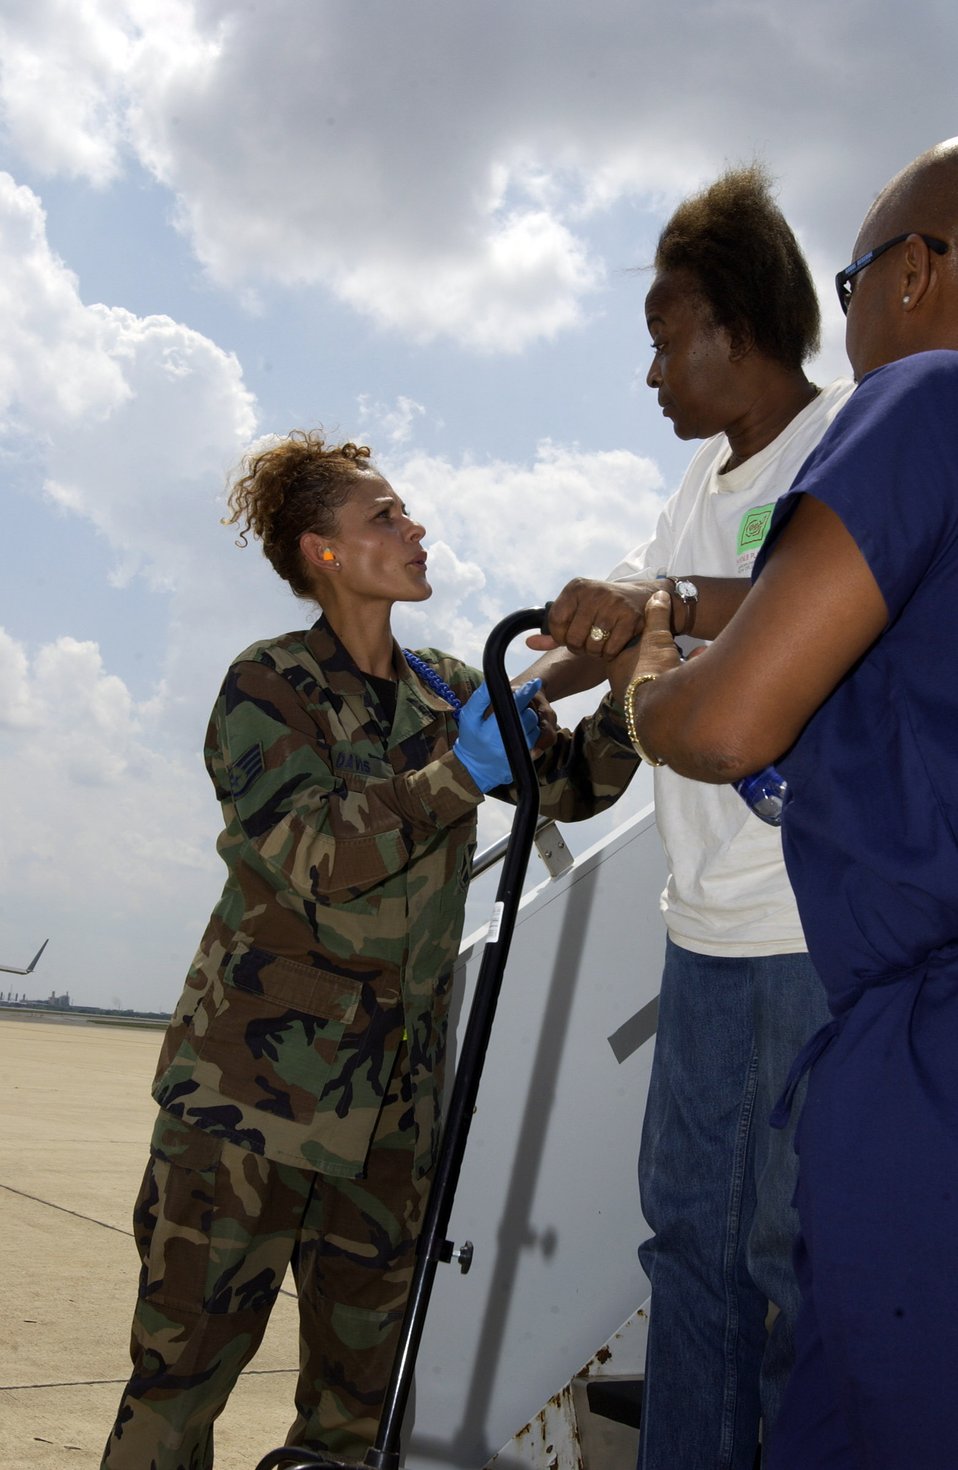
Aeromedical evacuation hub established at Lackland

LACKLAND AIR FORCE BASE, Texas -- Staff Sgt. Rose Davis, helps two Hurricane Katrina evacuees arriving here. The evacuees arrived Sept. 2 from New Orleans. They are being inprocessed, given a medical checkup, fed and put into temporary shelters. Sergeant Davis is assigned to the 343rd Training Squadron.